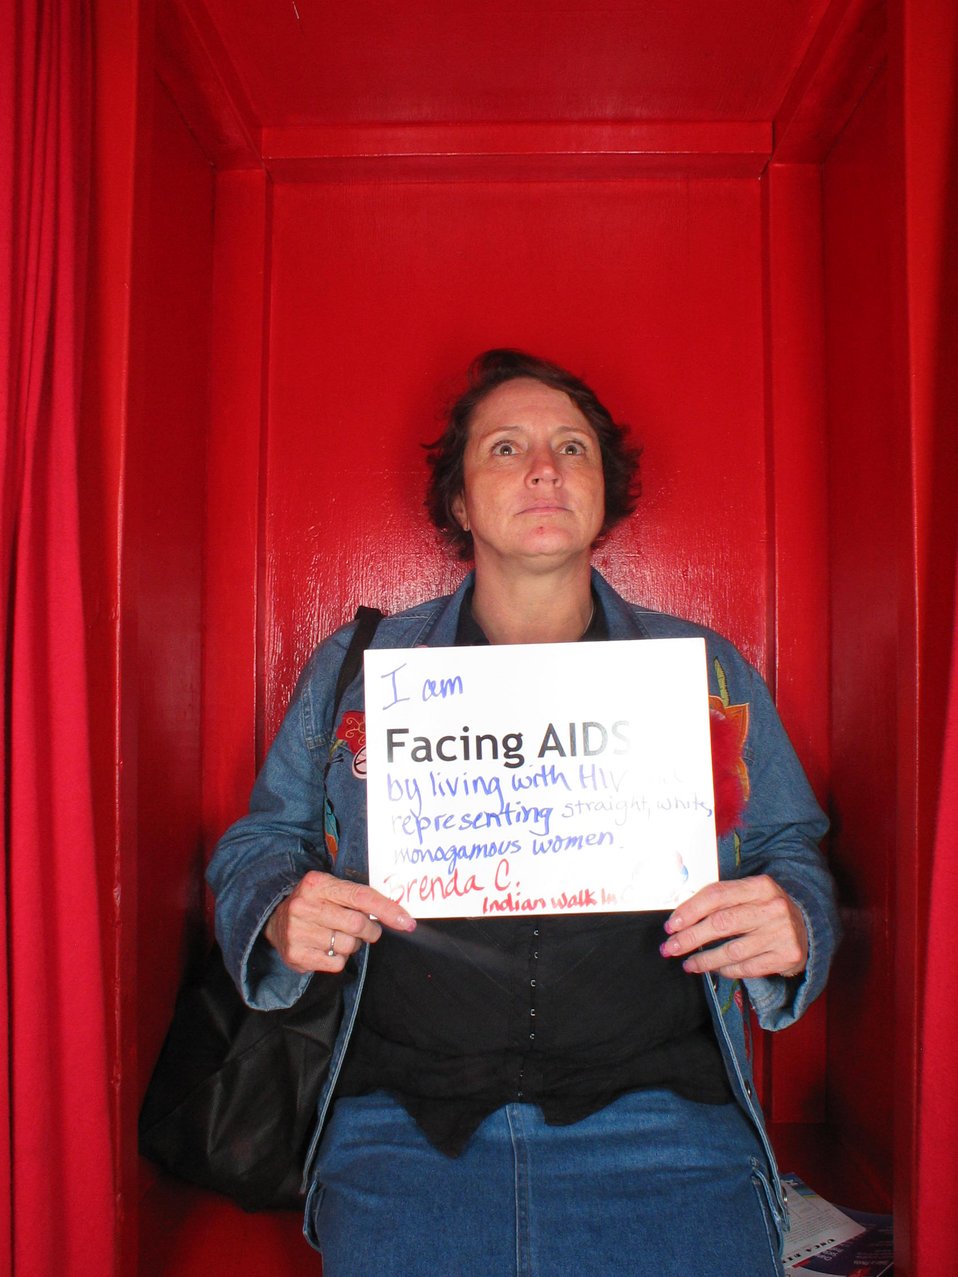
Facing AIDS by living with HIV and representing straight, monogamous women.